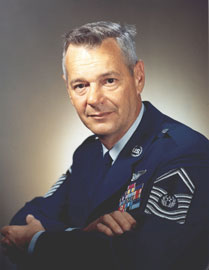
First CMSAF

1990's -- Chief Master Sgt. of the Air Force Paul W. Airey, U.S.